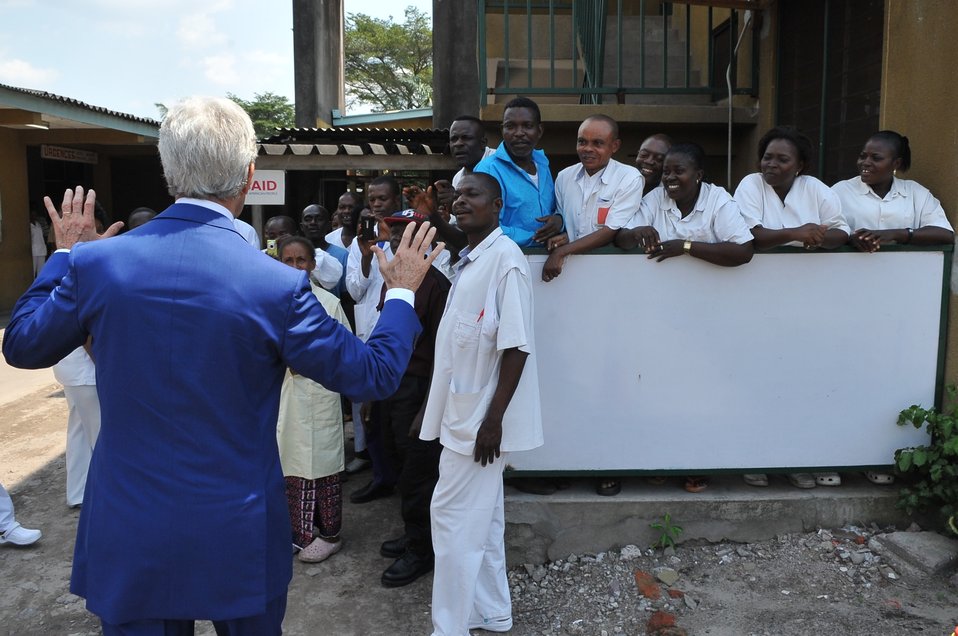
Secretary Kerry Bids Farewell to Staff at Fistula Clinic in Kinshasa

U.S. Secretary of State John Kerry bids farewell to doctors, nurses, and orderlies who work at a hospital providing fistula services after touring the facility in Kinshasa, Democratic Republic of Congo, on May 4, 2014.